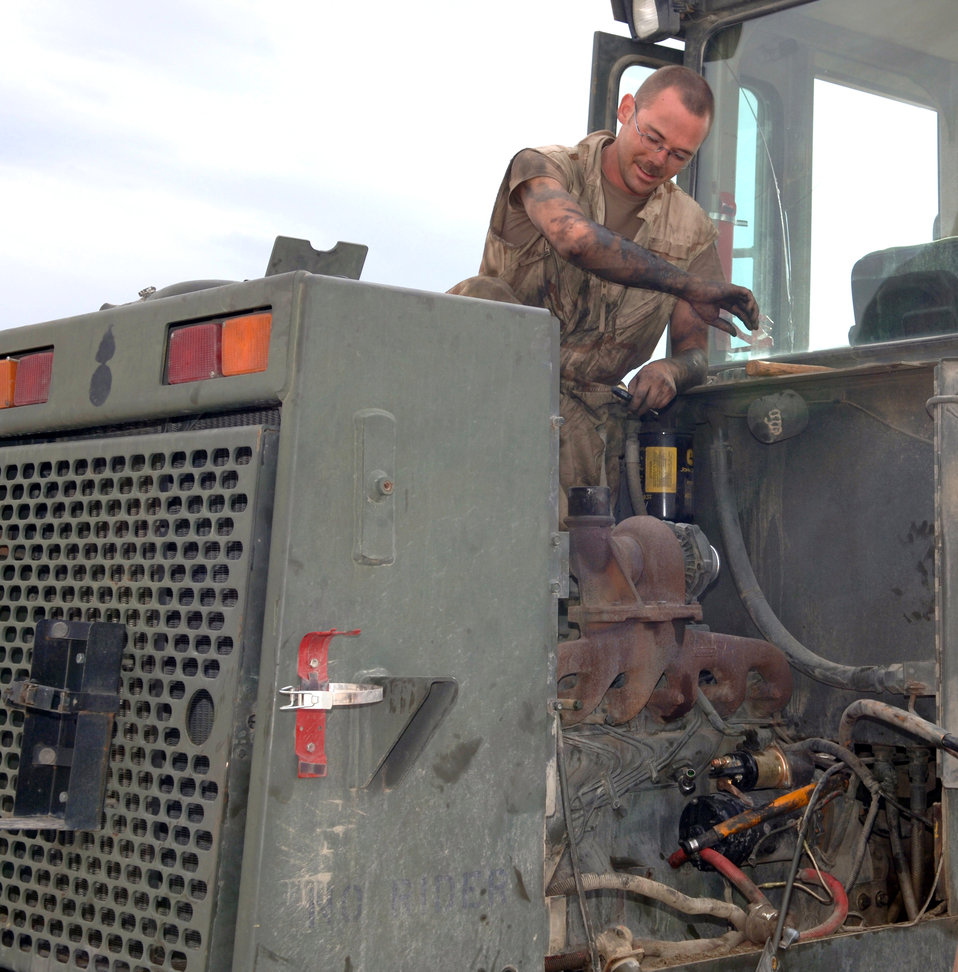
Elbow grease

BAGRAM AIR BASE, Afghanistan -- Airman 1st Class Jack Bartleson works on a forklift's engine here. He is a vehicle maintenance technician with the 455th Air Expeditionary Wing and is deployed from Langley Air Force Base, Va.